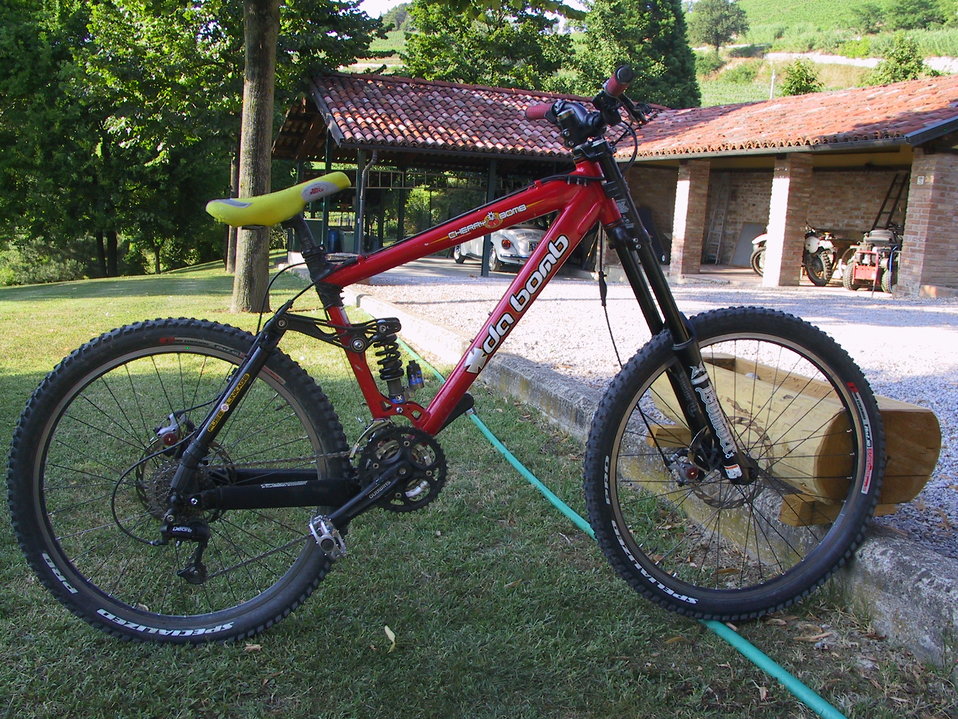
Italiano: Foto personale di Utente:Xskier, mountain bike marca Cherry modello Da Bomb